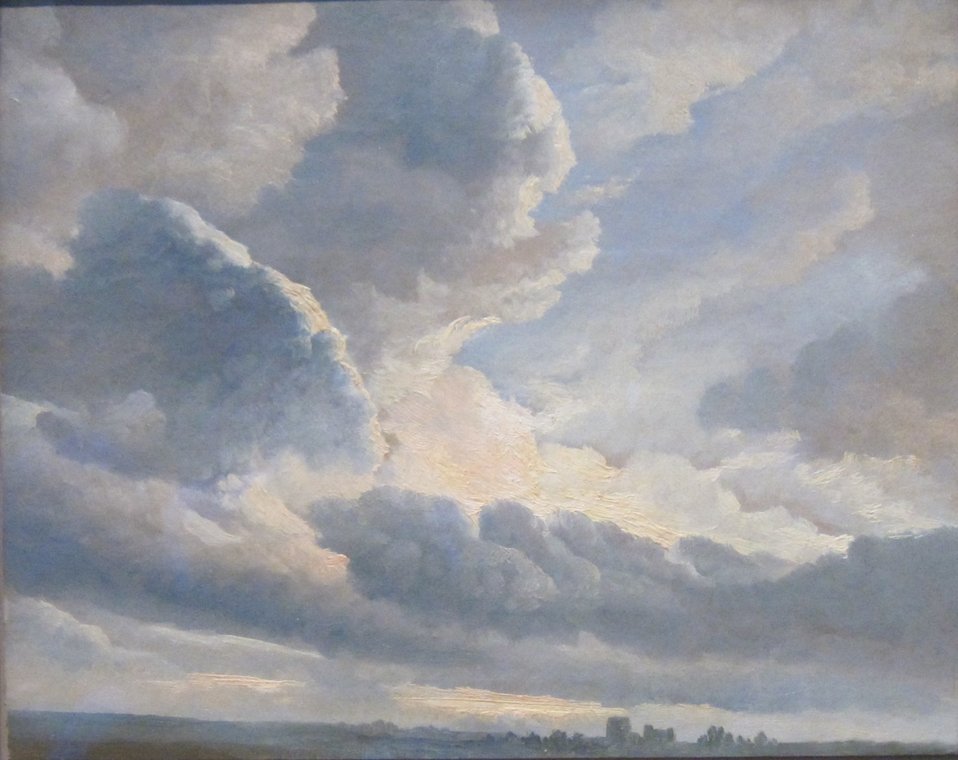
'Study of Clouds with a Sunset near Rome', oil painting on paper by Simon Alexandre-Cl√©ment Denis, 1786-1801, Getty Museum